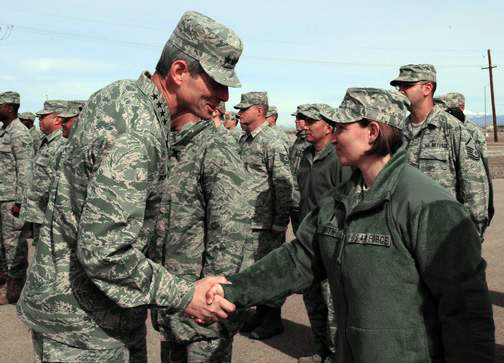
Holloman visit by chief of staff highlights contributions of America's Airmen

Air Force Chief of Staff Gen. Norton Schwartz shakes hands with 2nd Lt. Victoria Smith Jan. 27, 2010, at Holloman Air Force Base, N.M. General Schwartz visited Holloman AFB to see Airmen and operations firsthand. Lieutenant Smith is assigned to the 49th Material Maintenance Support Squadron.